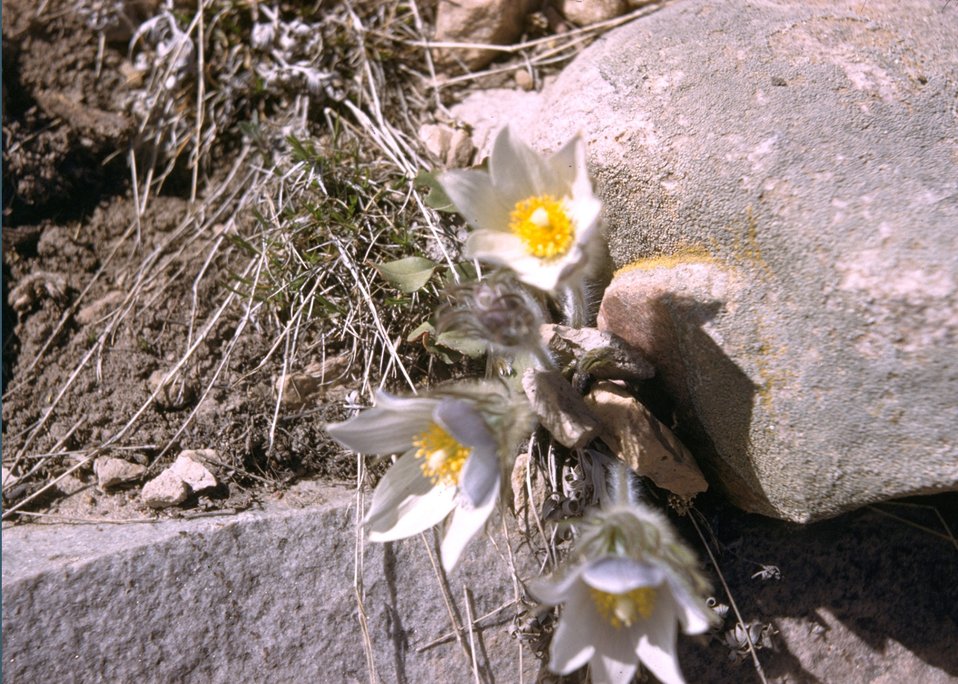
Close-up of a white sego lily.